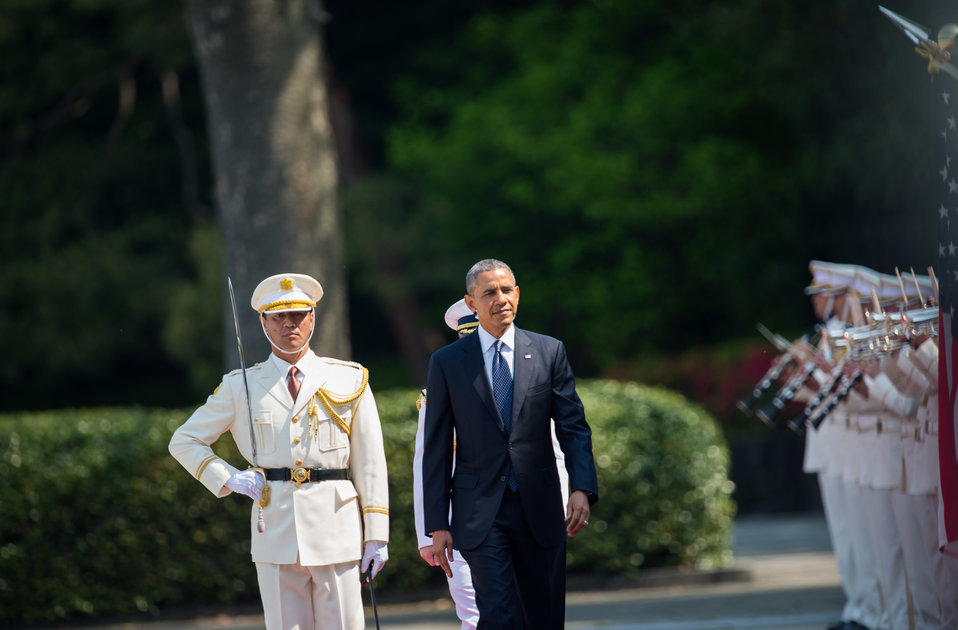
President Obama at the Welcome Ceremony in Japan

U.S. President Barack Obama participates in the welcome ceremony at the Imperial Palace during his state visit to Tokyo, Japan, on April 24, 2014.